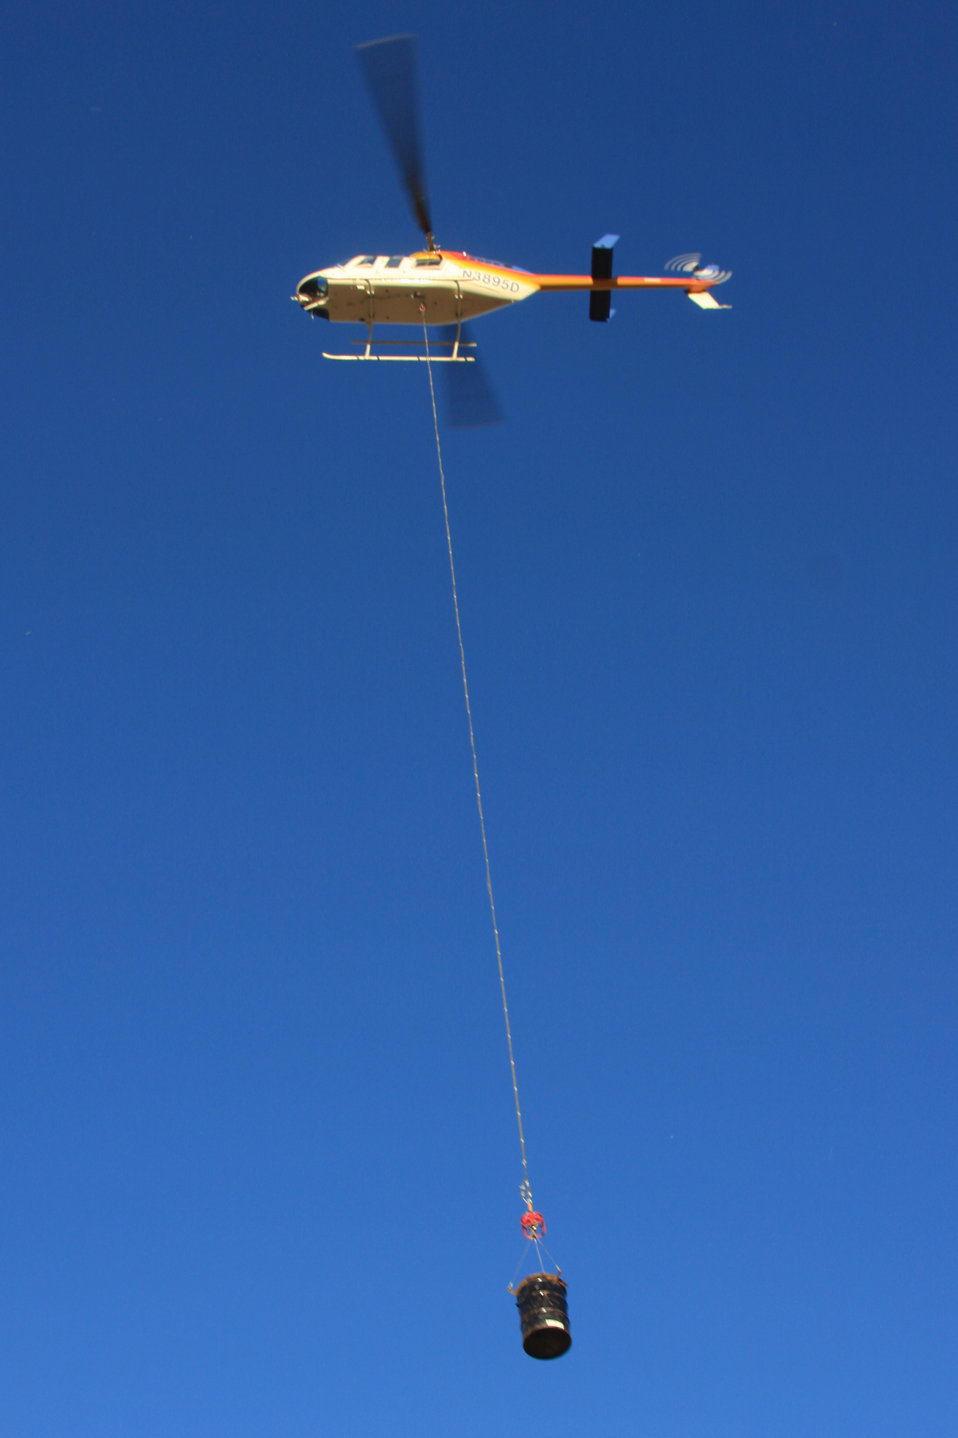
Gila Trout Transport

A Papillon helicopter carries a 55-gallon drum of native Gila trout up to Frye Creek on Feb. 23, 2011 in the Pinalenos Mountains of Arizona where the fish will be stocked. The project, funded by the American Recovery and Reinvestment Act, created the first Gila trout season in Arizona.